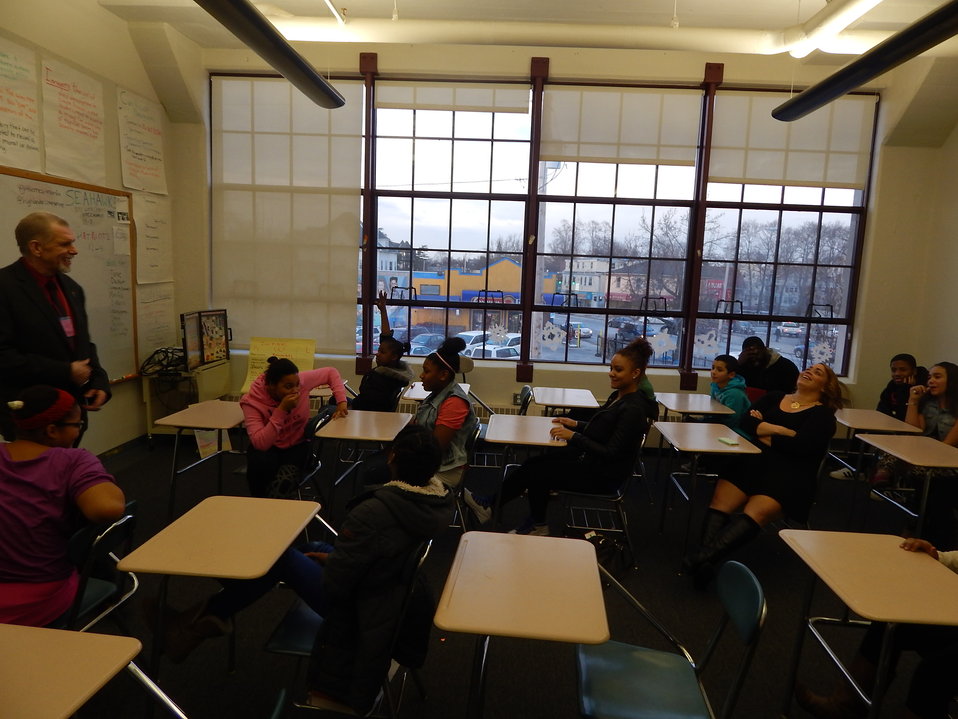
Rhode Island students particiate in NDFW

100 students participated in the Substance Abuse Prevention Presentations at Highlander Charter School (HCS) and Bishop McVinney Middle School (BMMS) on January 31st, 2014 during National Drug Facts Week.